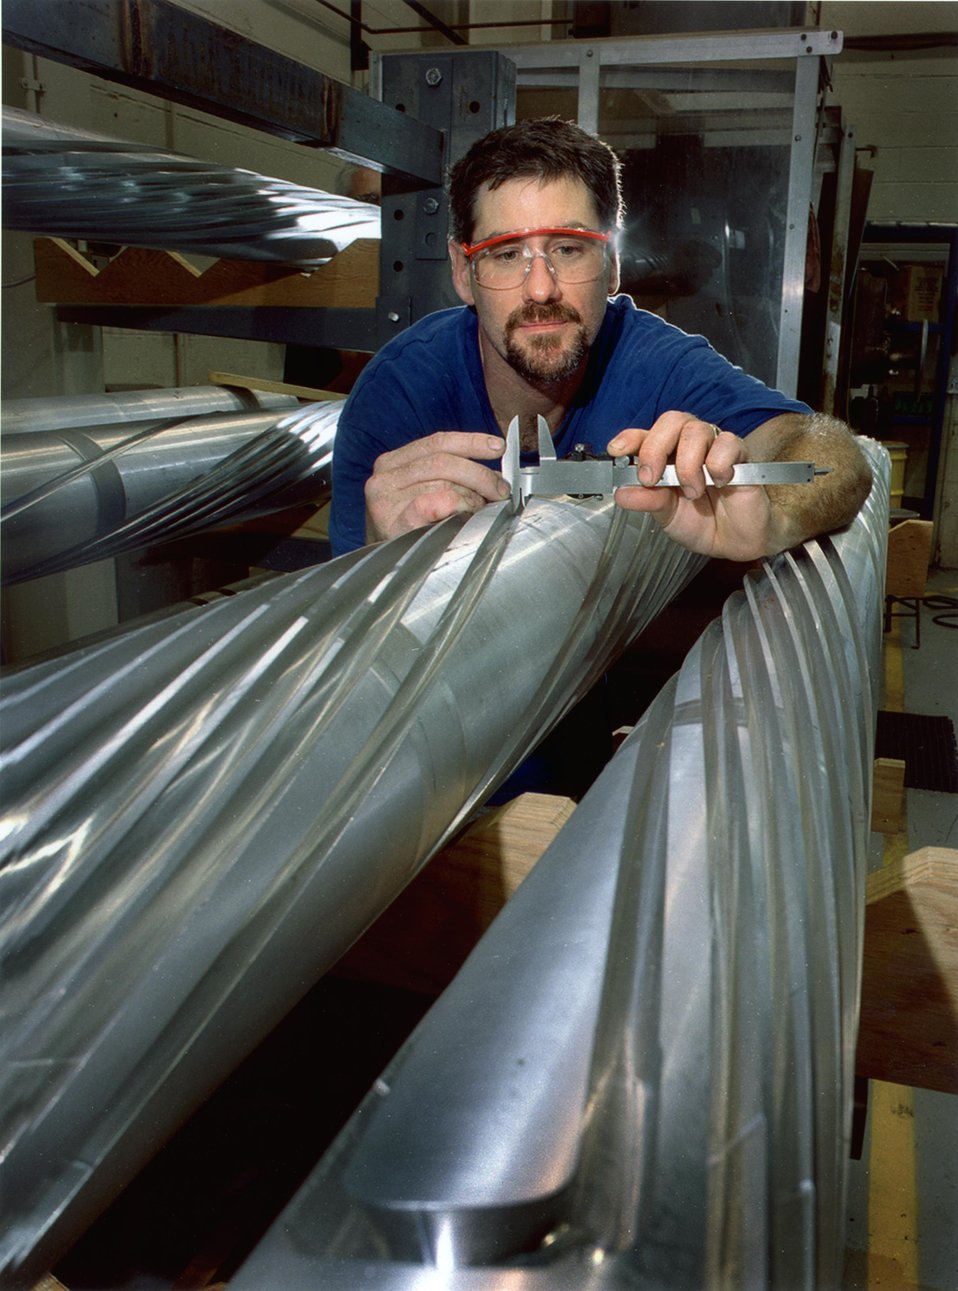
TECHNICIAN IN BNL'S CENTRAL SHOPS DIVISION MEASURING A SNAKE MAGNET COIL FORM IN ORDER TO CONSTRUCT A SIBERIAN SNAKE.

THE SIBERIAN SNAKE IS A STRING OF MAGNETS USED TO EXPLORE THE INTERNAL STRUCTURE OF PROTONS IN BNL'S RELATIVISTIC HEAVY ION COLLIDER. THE MAGNETS ARE INTEGRAL PARTS OF THE SPIN-POLARIZED PROTON PROGRAM AT RHIC. THE MAGNETIC FIELD PRODUCED BY THE SPIRAL PATTERN CAUSES THE PROTONS TO SPIN IN THE SAME DIRECTION AS THEY PASS THROUGH THE MAGNETS SO THAT SCIENTISTS CAN STUDY THE SPIN FACTOR OF PROTONS.